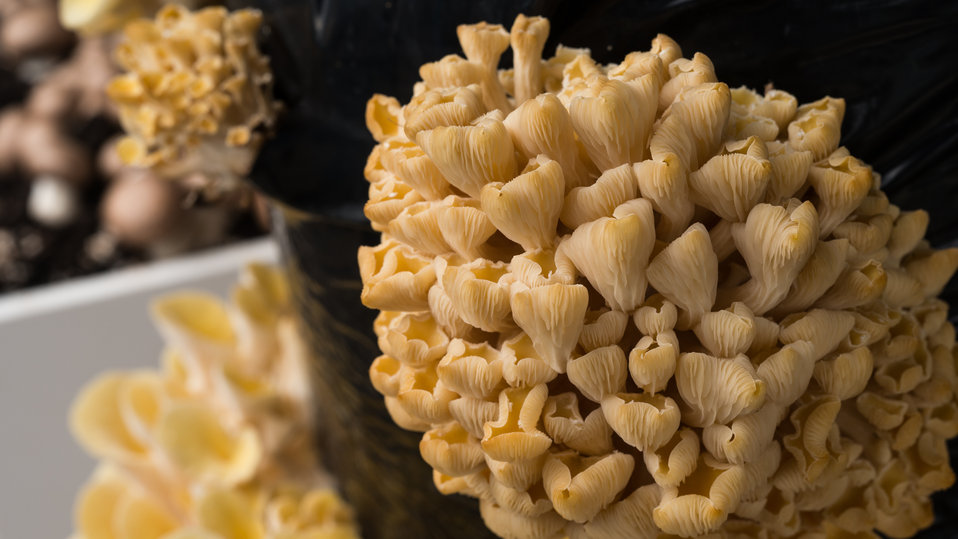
Yellow oyster (yellow and white), growing from a black plastic wrapped sawdust growing log, on display at the U.S. Department of Agriculture (USDA) farmers markets and Harvest Festival at the USDA Whitten Building east parking lot in Washington, DC, on Friday, November 22, 2013.